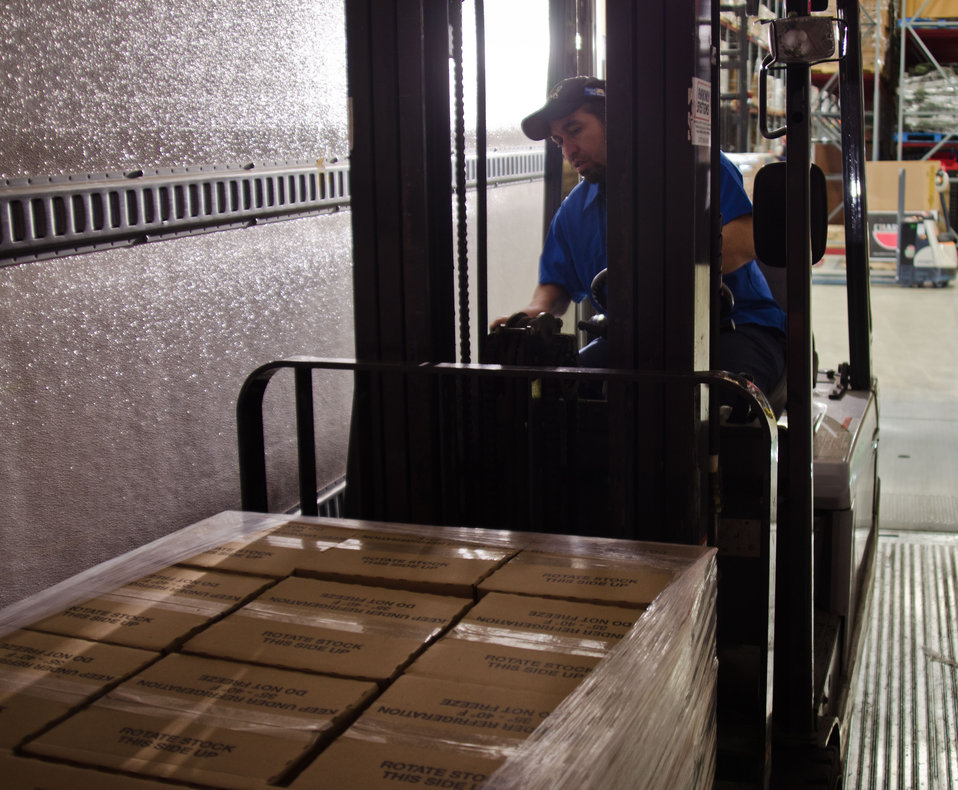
Forklift and pallet lift operators such as Gabriel Zarate and other warehousemen are the movers and shakers at the San Antonio Food Bank (SAFB) headquarters facility in San Antonio TX, on Monday, October 31, 2011. These are pallets of canned goods; fruit juices or dry beans have been provided through the United States Department of Agriculture (USDA) Commodities Supplemental Food Program (CSFP) and are being unloaded for rack storage in the background. SAFB is a non-profit organization that serves as a clearinghouse by receiving and storing truckloads of donated food, produce, and other grocery products in. These lifts load and stack most of the '...more than 44 million pounds of food, produce, and grocery products. These products are distributed over 500 human service agencies that help southwest Texans in 16 counties. By partnering with SAFB, these agencies save more than $70 million in food purchase costs. These values represent almost 4.6 million meals per month going to 40,000 poor and hungry families in the San Antonio area,'
according to SAFB. “We couldn’t do what we do without our partnership with USDA’” said President and CEO Eric Cooper. He continues, “We are privileged in partnering (with the USDA) to feeding kids, through the summer, with the Summer Food Service Program, and throughout the year, with the Child and Adult Care Feeding Program (CACFP). Then in our approach to feeding seniors, we partner with USDA in the CSFP, and the Senior Farmer’s Market (Nutrition) Program. And then work to bring all our (needy) parties together with our Supplemental Nutrition Assistance Program (SNAP) Outreach. You know, once families have access to food we believe it is important to educate them. Through the support of the SNAP-Education Program we are able to educate them during their time of need. With this comprehensive approach we are really able to get the right food, at the right amount, at the right time, to needy families throughout our community – which allows us to feed the fifty-eight thousand we do, each week.”
SAFB serves 16 counties in Southwest Texas and states, “Nearly one out of every four children and one out of every five adults in Southwest Texas lives in poverty and has difficulty meeting basic nutritional needs.” According to SAFB, sixty-five percent of the people requesting emergency food have children. “Additionally, the senior citizens and those living on a fixed income generally have limited funds for a consistent grocery budget.”
San Antonio is the seventh largest city in the nation with surrounding farms and ranches near its rivers and water supplies. When available they provide fresh surplus produce. Other commodities come from the food industry and manufacturers. The major food brand companies that for various reasons have surplus commodities donate it to SAFB.
The United States Department of Agriculture donates commodities through programs such as The Emergency Food Assistance Program (TEFAP), while Texas farmers supply fresh produce to their Fresh Produce Program.
Public donations come in the form of money, food, volunteer time, and advocacy.